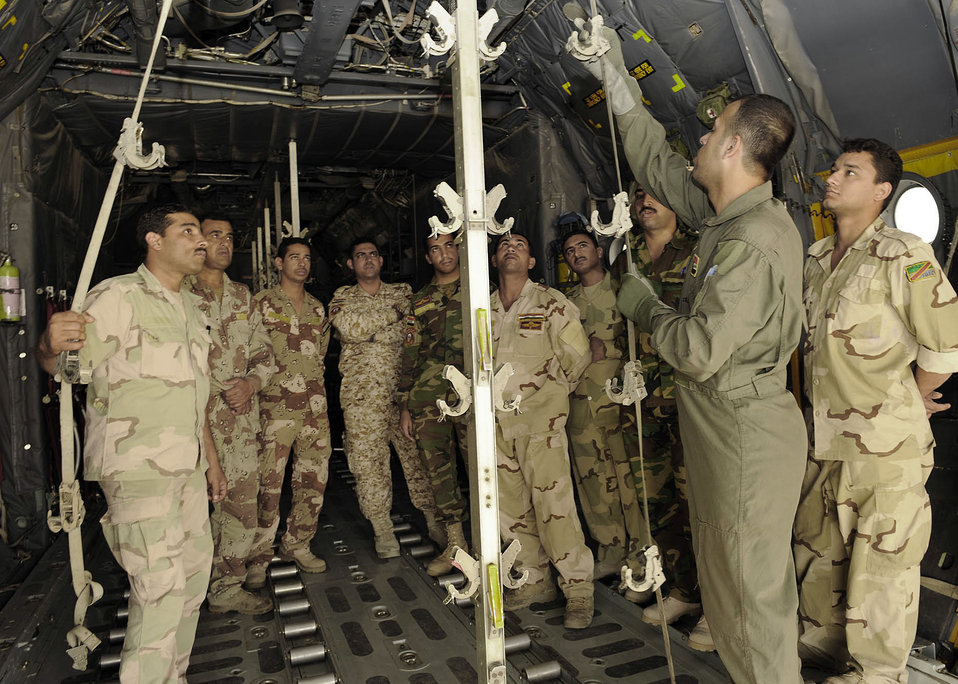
Air Force flight surgeons hand over training mission to Iraqis

Iraqi air force Lt. Tahssen explains the procedures to reconfigure a C-130 for aeromedical evacuation transport to Iraqi flight medic students June 2 at New Al-Muthana Air Base, Iraq. The four-week course, once taught by U.S. instructors, is now instructed by Iraqis. Lieutenant Tahssen is a nurse and flight medic instructor.